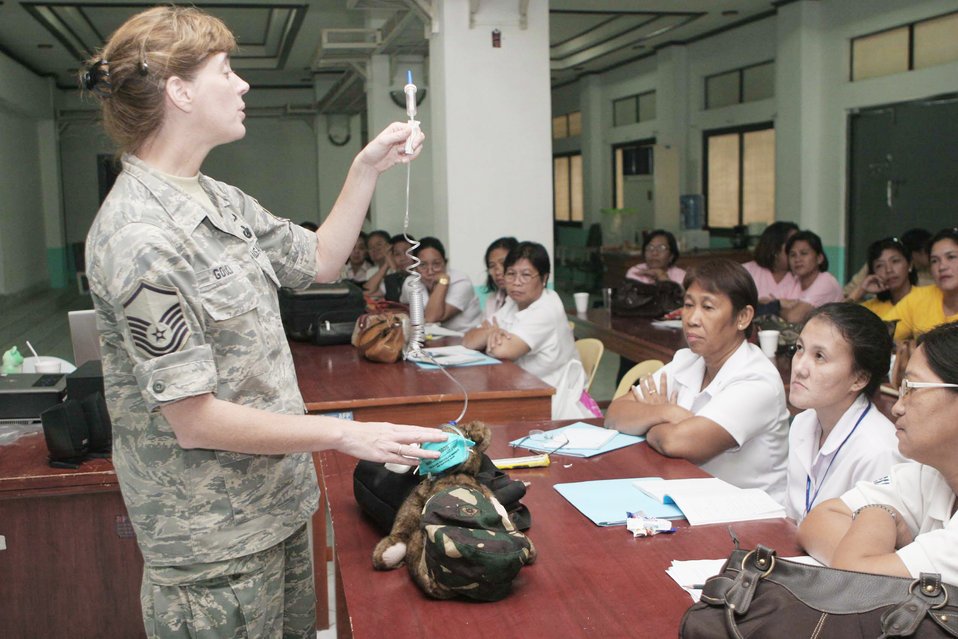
Medics teach mental health classes in Philippines

Master Sgt. Rose Gould uses a stuffed bear with a tube attached to demonstrate how to communicate the physical scars of war to a child at a combat stress seminar at the Camp Navarro General Hospital at Western Mindanao Command Nov. 17, 2009, in Zamboanga, Philippines. Sergeant Gould is a Joint Special Operations Task Force member. Taught jointly by the hospital psychologist and members of the JSOTF-P Command chaplain team, the three-day seminar focused on how to ease the psychological scars of war and effective coping strategies.